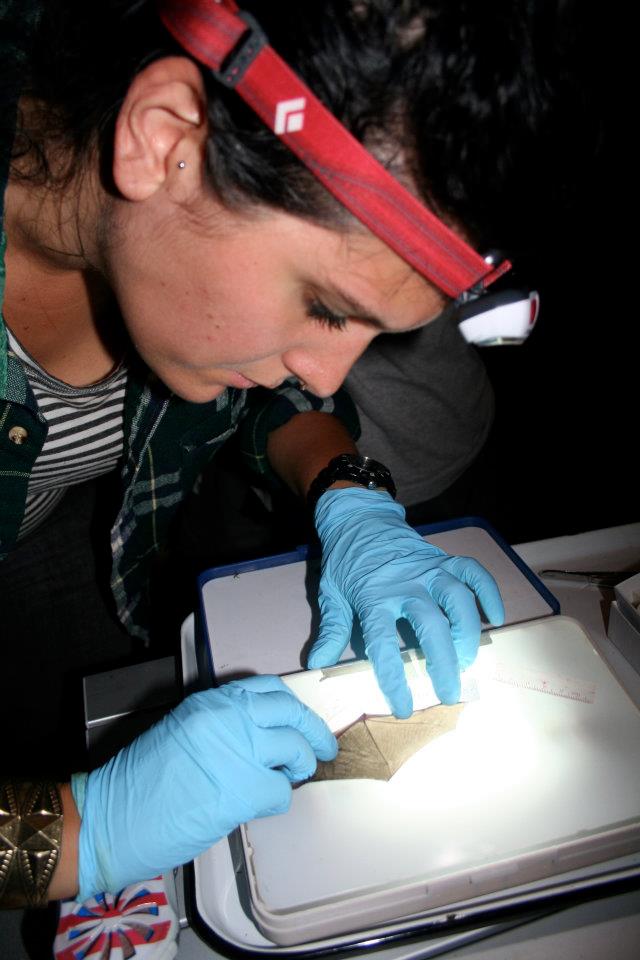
Boston University technician inspects bat wing